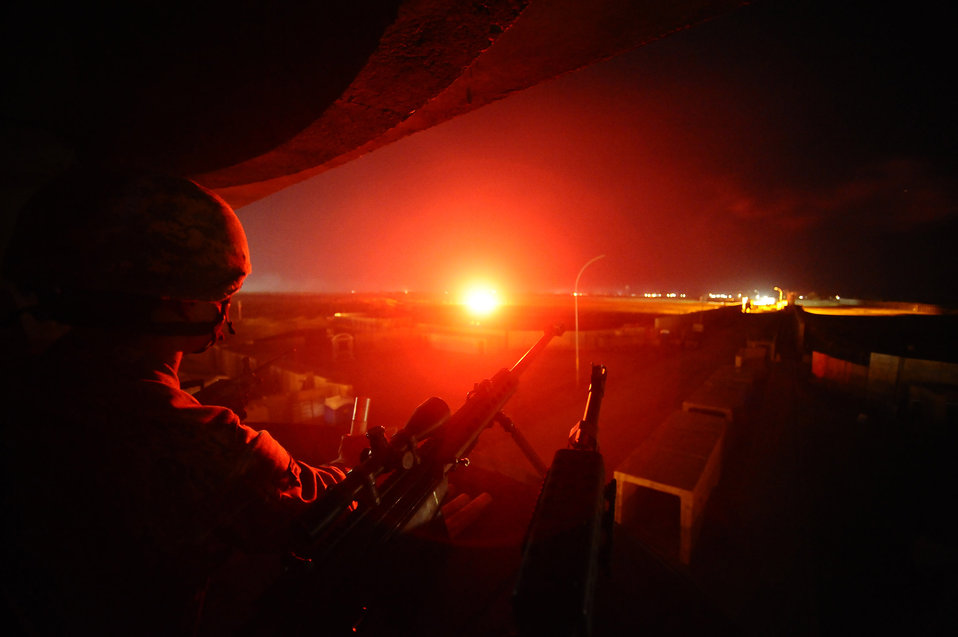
A flair for signaling

Airman 1st Class Martin Uresti fires a signal flare Nov. 15 from an observation tower on Joint Base Balad, Iraq. Several security forces Airmen were practicing their proficiency deploying signal and illumination flares. Airman Uresti is deployed from Lackland Air Force Base, Texas.